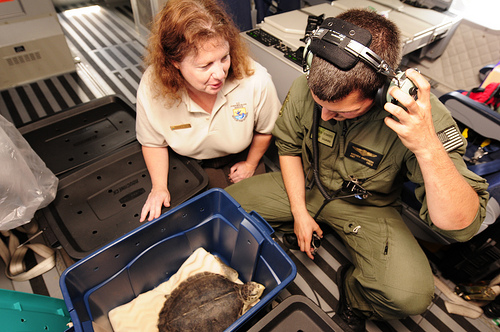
Stranded Sea Turtle Recovered for Observation

NEW ORLEANS - Dr. Sharon Taylor of the U.S. Fish and Wildlife Service and U.S. Coast Guard Petty Officer 3rd Class Andrew Anderson observe a sea turtle aboard a U.S. Coast Guard HC-144A Ocean Sentry aircraft, May 30, 2010. The tutle was found stranded on Louisiana's coast and transported to Florida to be release back into the wild. U.S. Coast Guard photo by Petty Officer 2nd Class Luke Pinneo